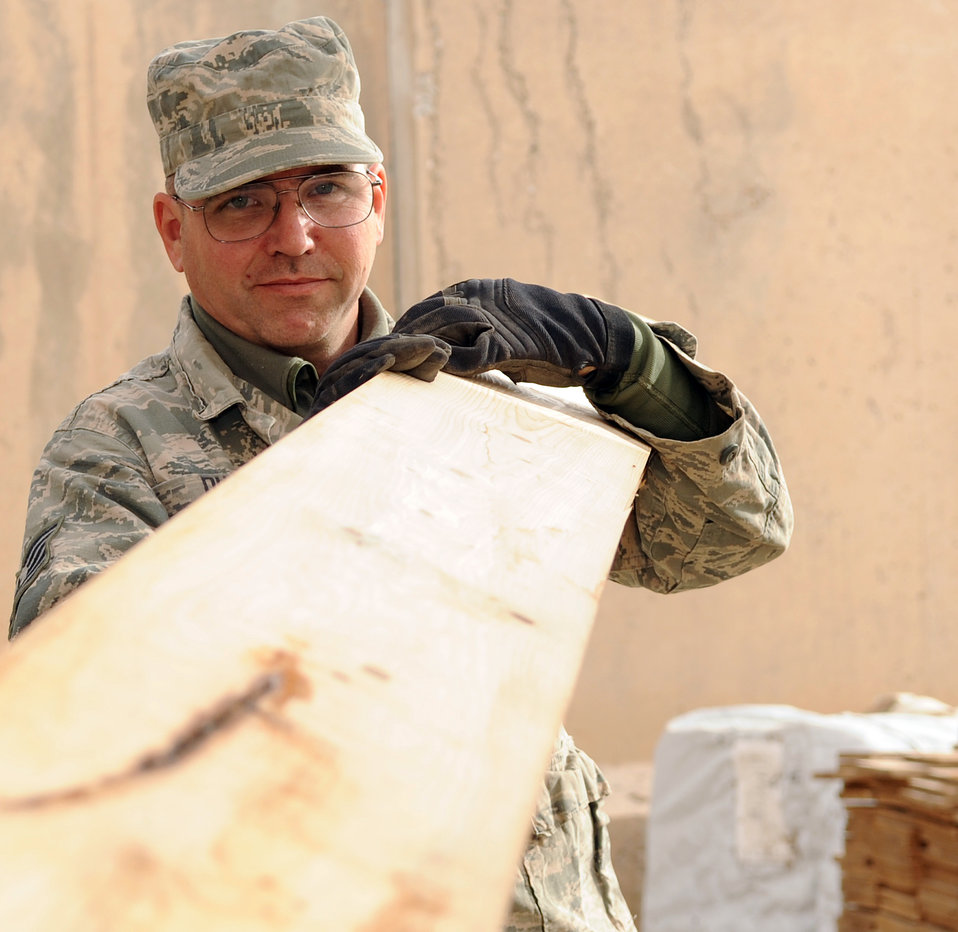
Cancer free, serving proud: Kirkuk Airman shares his story

Tech. Sgt. Mark Duran builds support beams Jan. 28, 2010 at Kirkuk Air Base, Iraq. Sergeant Duran is now six years cancer free. He is a 506th Expeditionary Civil Engineer Squadron structures technician deployed from 301st Civil Engineer Squadron Joint Reserve Field Carswell Fort Worth, Texas.